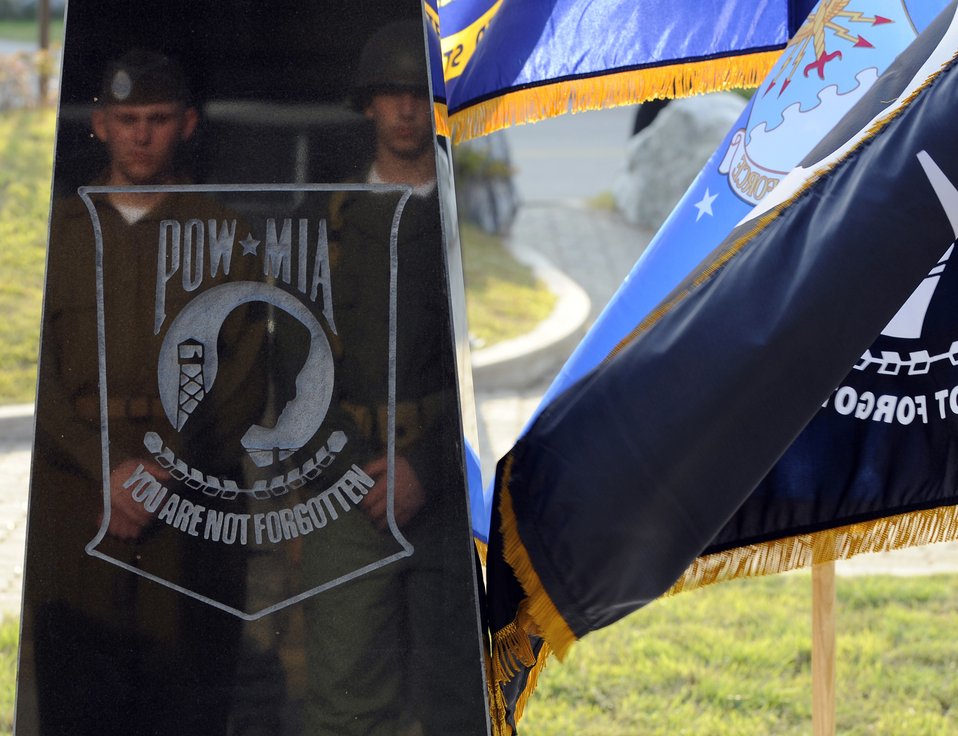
We remember

Airmen and Soldiers participate in the POW/MIA remembrance ceremony Sept. 18, 2009, at Osan Air Base, South Korea. Soldiers wearing historical military uniforms are seen in the reflection of the POW/MIA memorial.